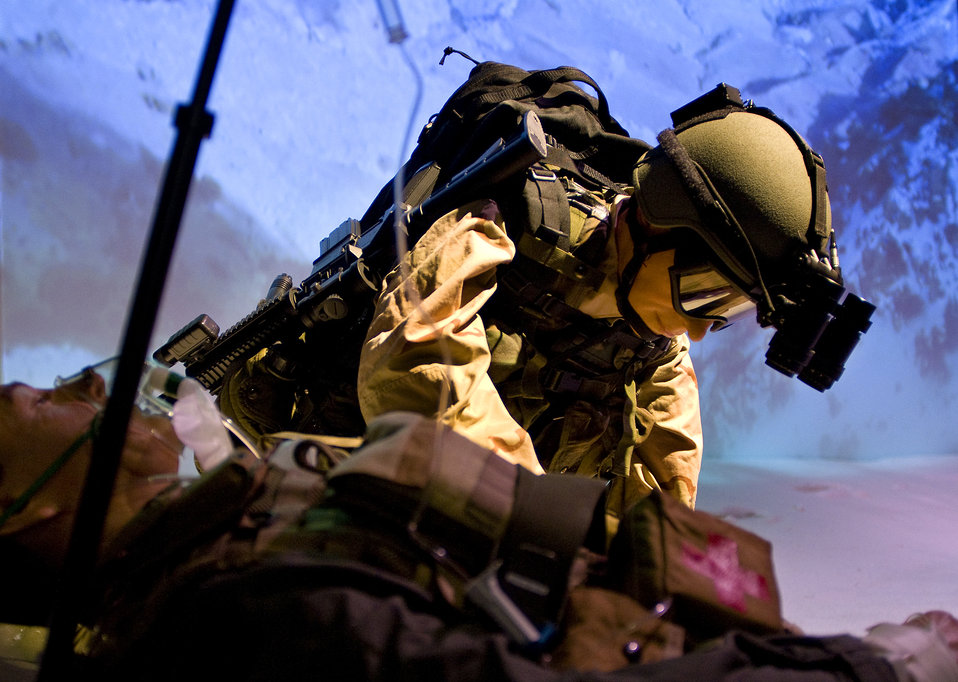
Museum opens exhibit dedicated to 'Warrior Airmen'

A detailed mannequin emulates Master Sgt. Keary Miller, a pararescuman who fought during the Battle of Takur Ghar the deadliest entanglement of Operation Anaconda in Afghanistan, which is on display at the Warrior Airmen Exhibit at the National Museum of the U.S. Air Force at Wright-Patterson Air Force Base, Ohio.